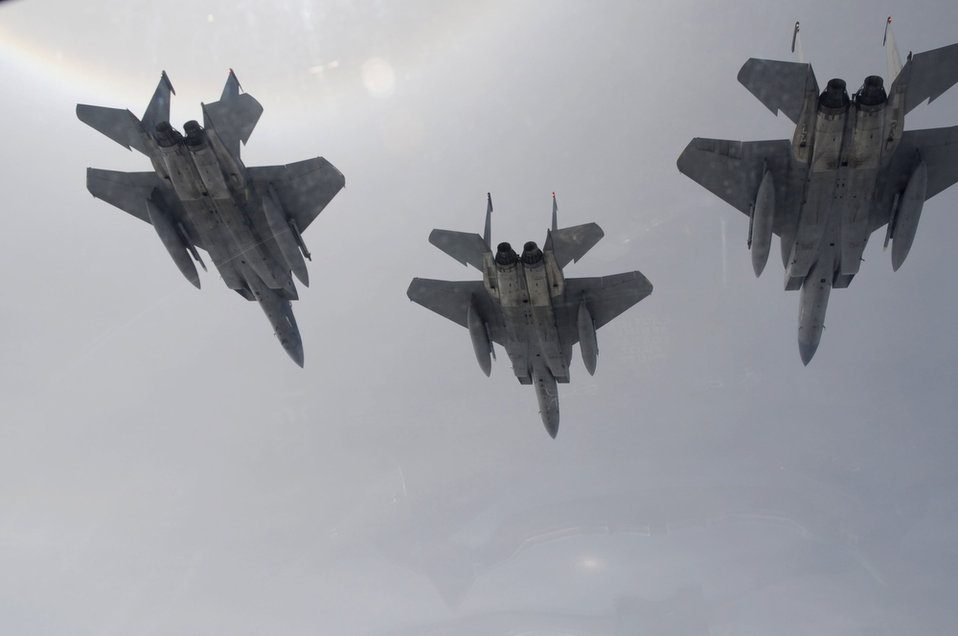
Cope Tiger 2011

F-15 Eagles assigned to the 44th Expeditionary Fighter Squadron at Kadena Air Base, Japan, fly over Thailand March 23, 2011, prior to starting an exercise scenario during Cope Tiger 2011, which runs from March 14 through 25. Participants of Cope Tiger include the U.S. Air Force, the U.S. Marine Corps, the Royal Thai Air Force, Royal Thai Army and the Republic of Singapore Air Force.